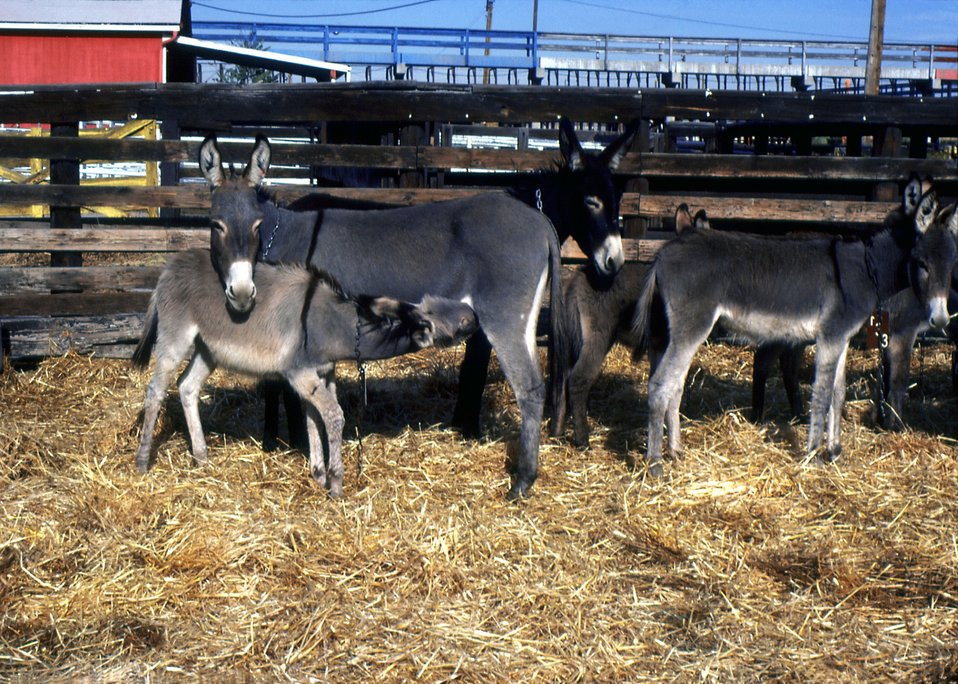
Burrows in Pen